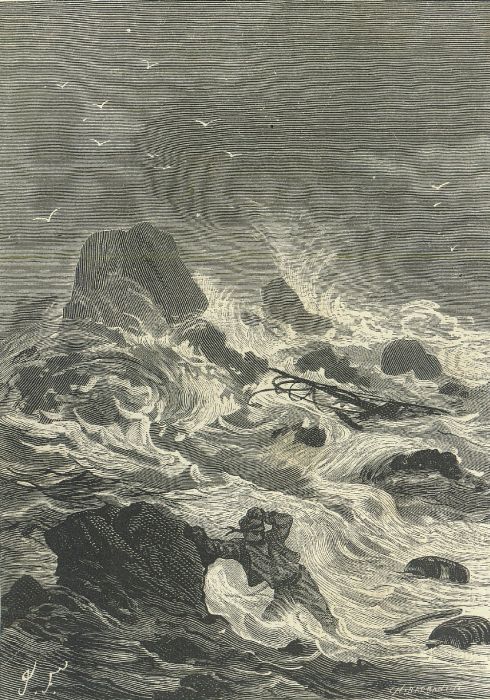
An illustration from the novel 'The Child of the Cavern' (alternative English titles for this novel include: Black Diamonds, Black Indies, Child of the Cavern, or Strange Doings Underground and The Underground City) by Jules Verne drawn by Jules Férat. Polski: Ilustracja powieści Juliusza Verne'a 'Czarne Indie' autorstwa Julesa Férata. Français : 'Les Indes noires', Jules Férat. Orginal description from the book: Français : Les lames furieuses l’avaient rudement roulé sur les récifs.